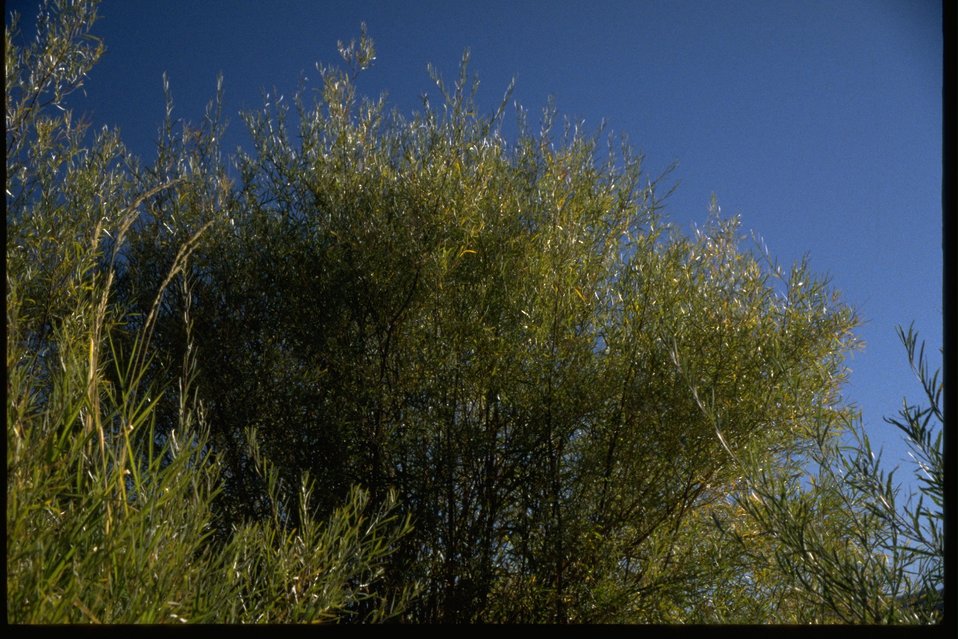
Riparian vegetation along the bank of the John Day River, near Bridge Creek.